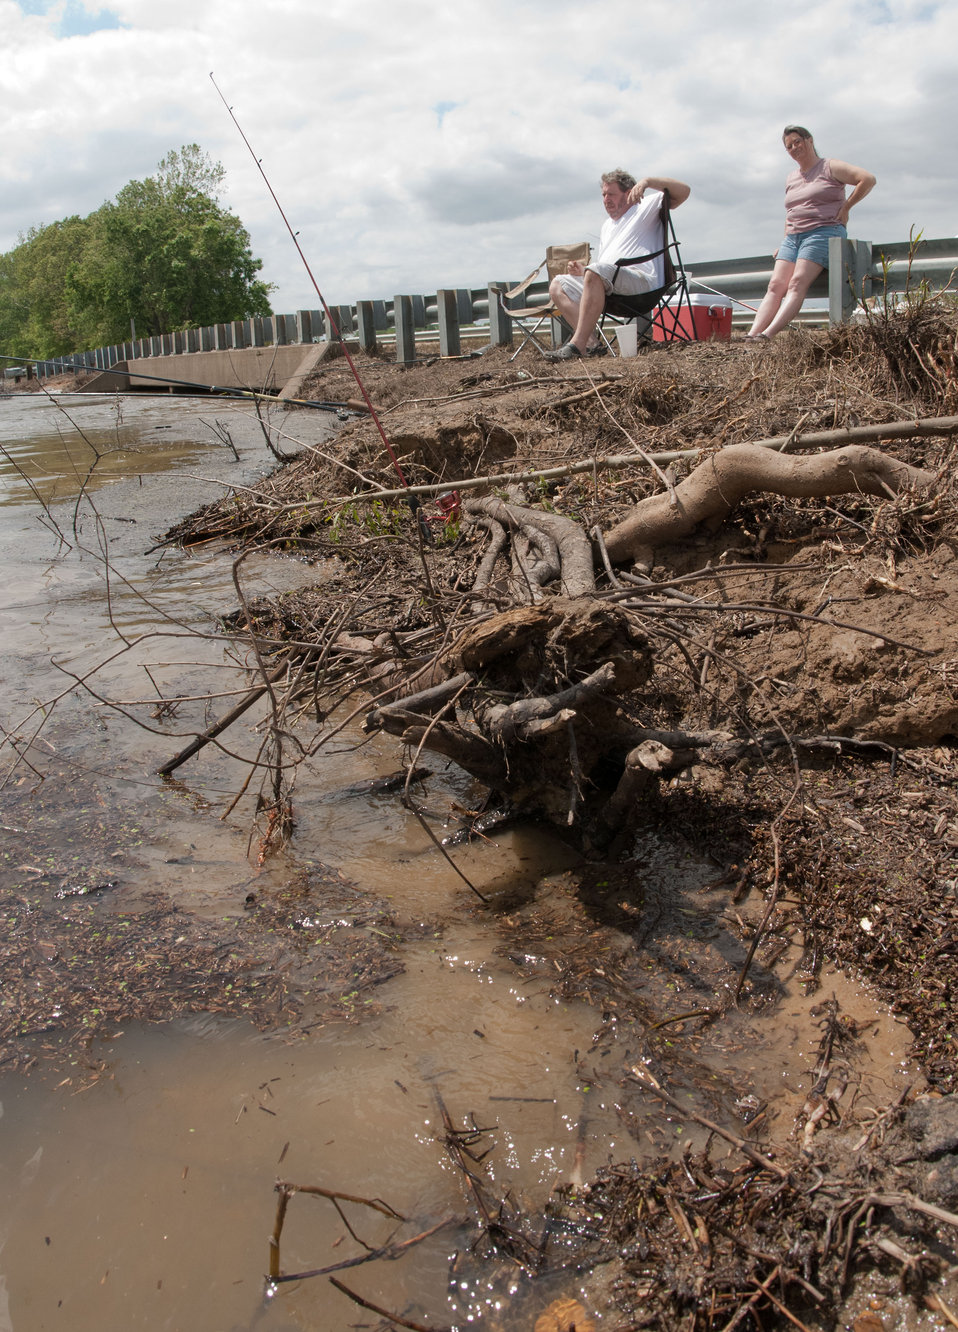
David and Nona Rodenhouser relax in folding chairs and try their luck fishing the flooded farmland off of highway 88 near Porter’s Gap Rd. that is several feet deep on Saturday, May 21, 2011.